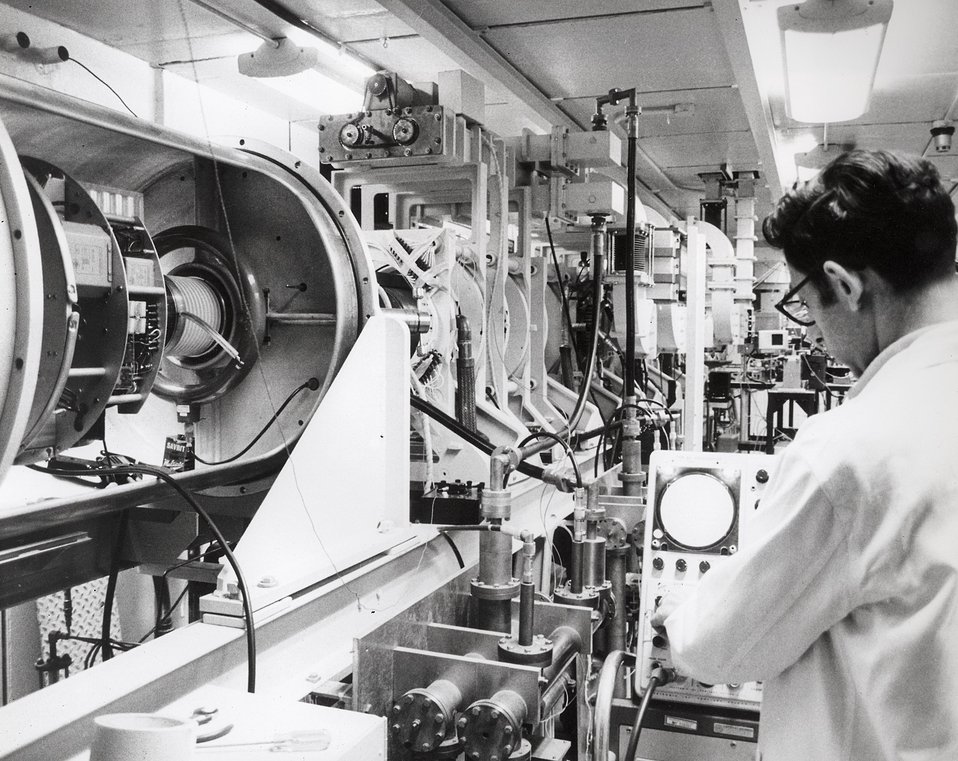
A new linear accelerator recently installed in the chemistry division of Argonne.
c.1970